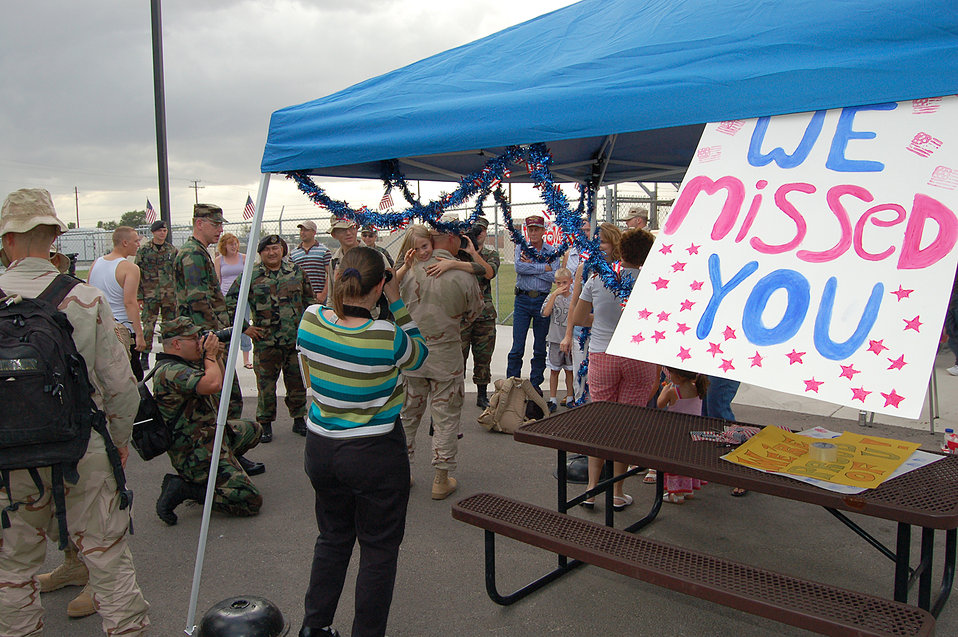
OIF return

Thirteen Airmen meet family and friends during a welcome home party at the 47th Security Forces Squadron building at Laughlin Air Force Base, Texas Aug. 29, after serving a nine-month deployment in support of Operation Iraqi Freedom.